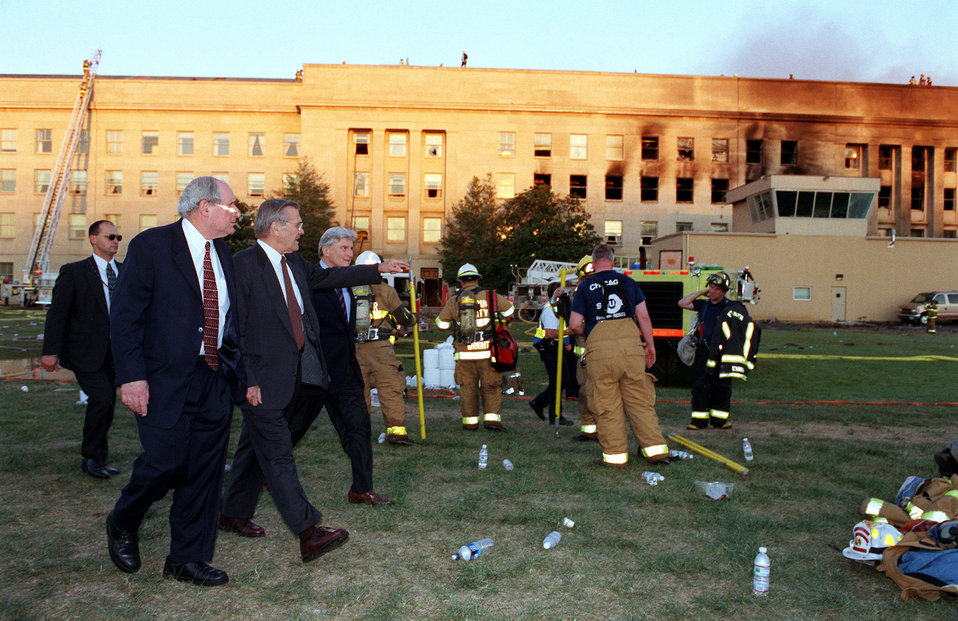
Pentagon heliport

WASHINGTON -- Secretary of Defense Donald H. Rumsfeld (center) leads Sen. Carl Levin (left), D-Mich. and Sen. John Warner (right), R-Va., to the crash scene at the Pentagon heliport on Sept. 11, 2001. Rumsfeld earlier conducted a news conference with reporters in the Pentagon briefing room on the terrorist attack of the Pentagon.